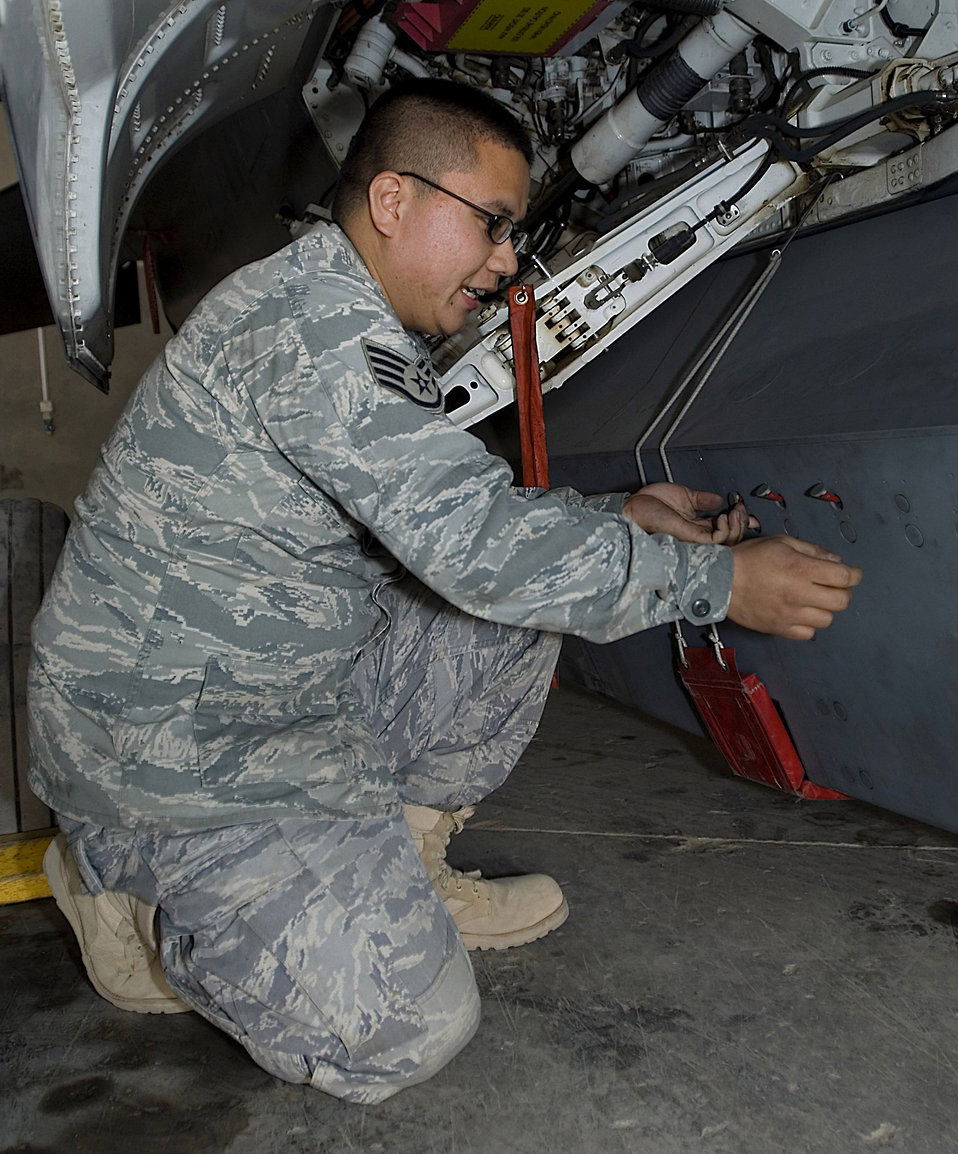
TARS pod brings picture into focus

Staff Sgt. Christopher Tobias opens a panel Dec. 21 on a Theater Airborne Reconnaissance System pod mounted on an F-16 Fighting Falcon at Joint Base Balad, Iraq. Ground commanders use TARS imagery to achieve their tactical objectives. Sergeant Tobias, one of four 332nd Expeditionary Aircraft Maintenance Squadron avionics maintainers responsible for the 332nd Expeditionary Fighter Squadron's TARS pods, is a native of Long Beach, Calif., and is deployed from Luke Air Force Base, Ariz.